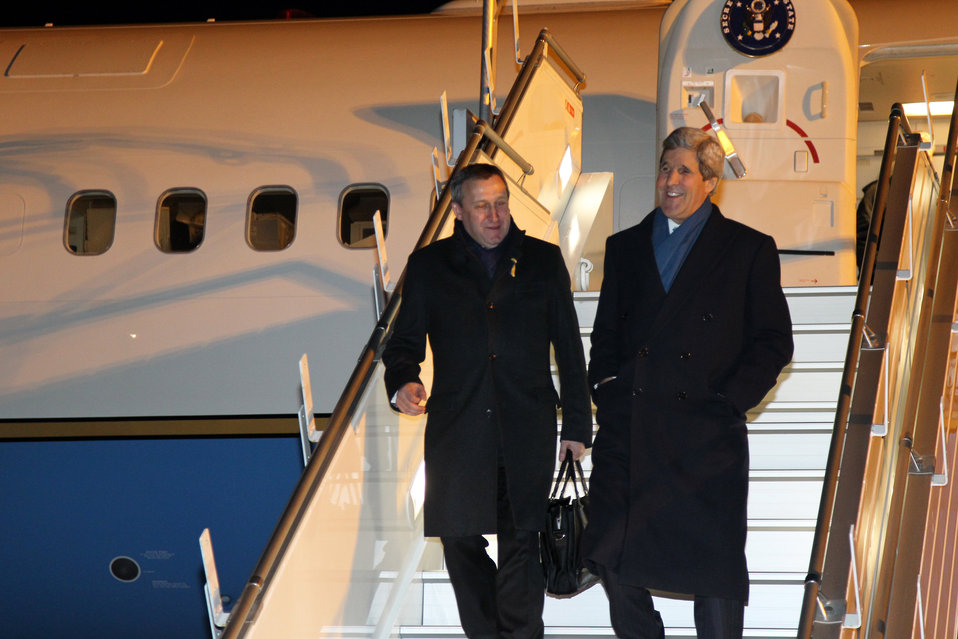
Secretary Kerry and Ukrainian Foreign Minister Deshchytsia Arrive in Paris

U.S. Secretary of State John Kerry and Ukrainian Foreign Minister Andrii Deshchytsia arrive in Paris, France, on March 5, 2014.